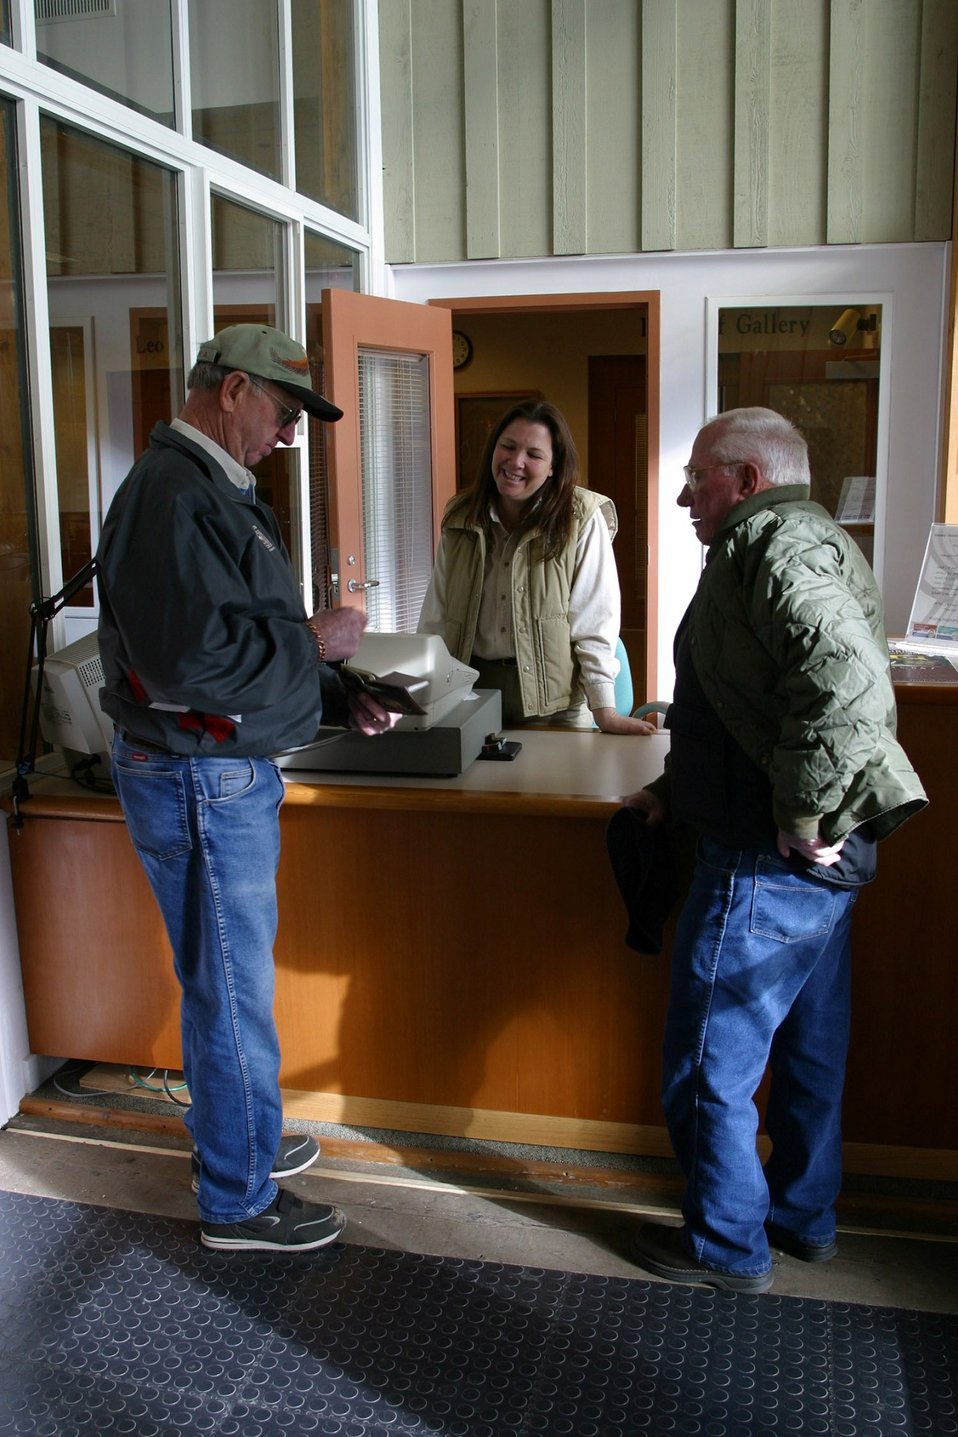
Visitors are greeted by BLM staff and Volunteers.